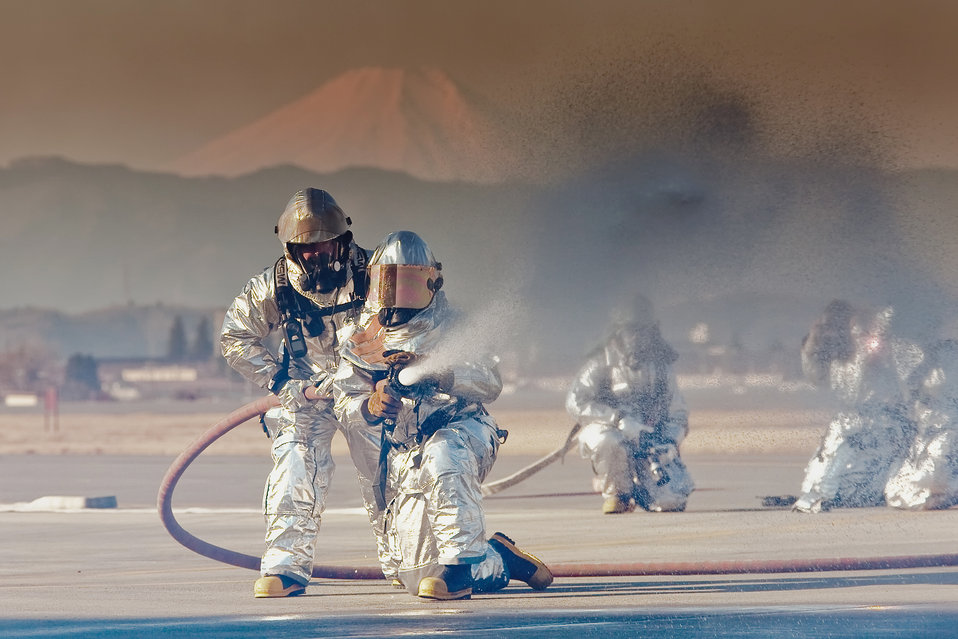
Almost out

Firefighters from the 374th Civil Engineer Squadron put out a simulated aircraft fire during an emergency management exercise Feb. 4, 2011, at Yokota Air Base, Japan.